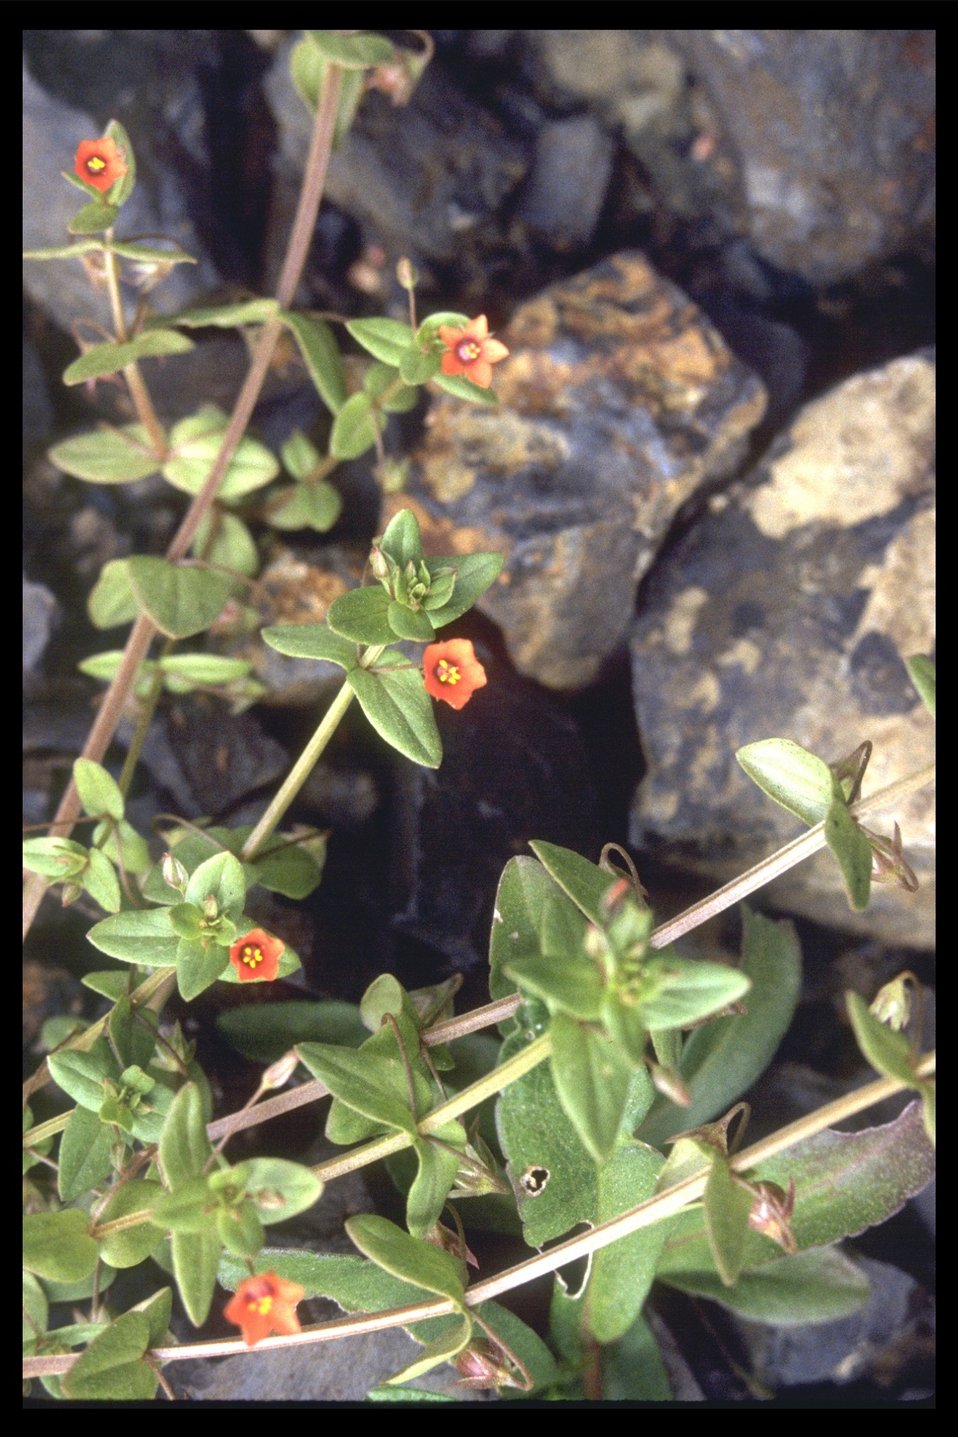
Scarlet pimpernel near Yaquina Head Lighthouse.